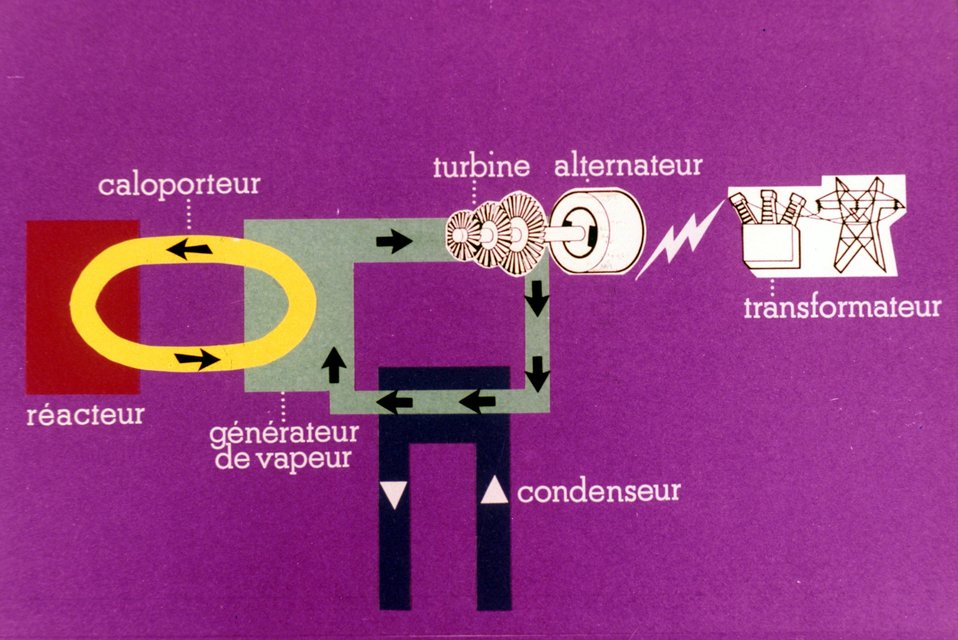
SchÐma d'une centrale nuclÐaire.